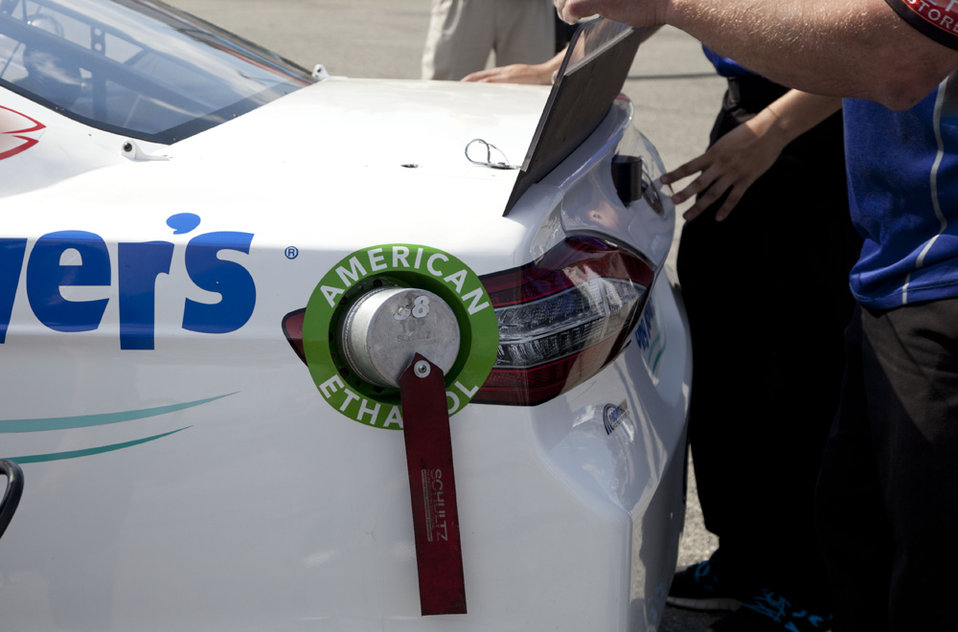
Since 2011, NASCAR has used E15 -- a biofuel blended with 15 percent American ethanol -- to fuel the cars. NASCAR has completed nearly 4 million miles using E15 and racing teams report an increase of up to 10 horsepower.